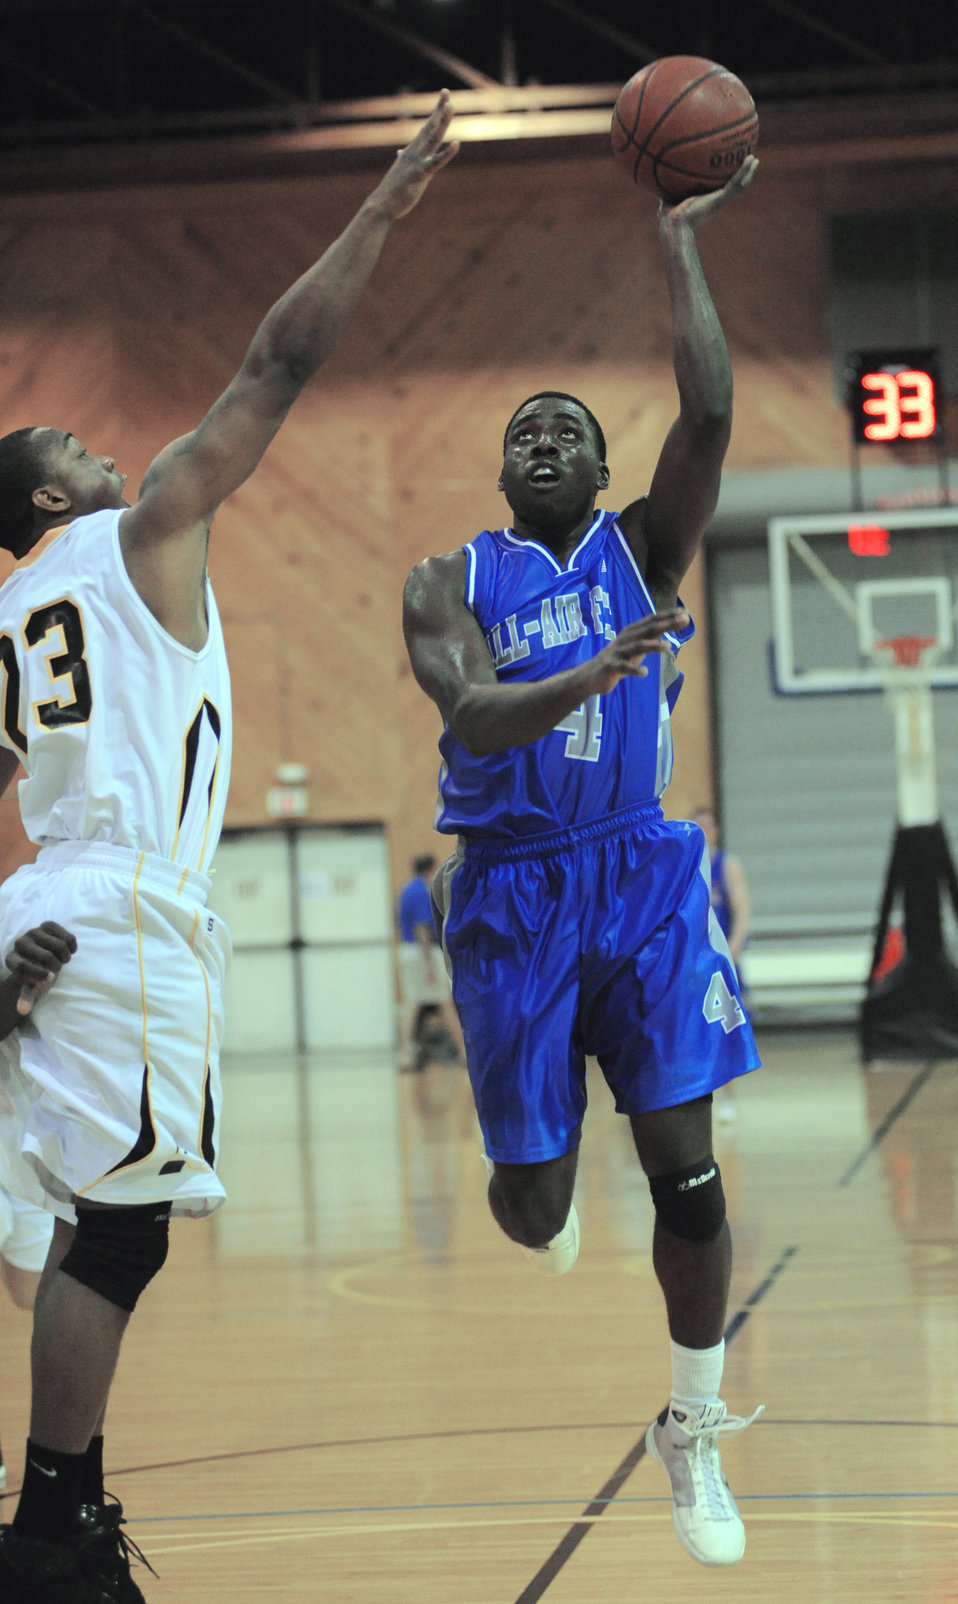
Armed Forces Basketball Championship

Second Lt.Danny Nwaelele, from Keesler Air Force Base, Miss., takes the ball to the hoop during a basketball game against the Army. The Air Force men beat the Army team 62-59 in the first round of games for the Armed Forces Basketball Championship in Millington, Tenn. The tournament will run from May 12th through the 17th.